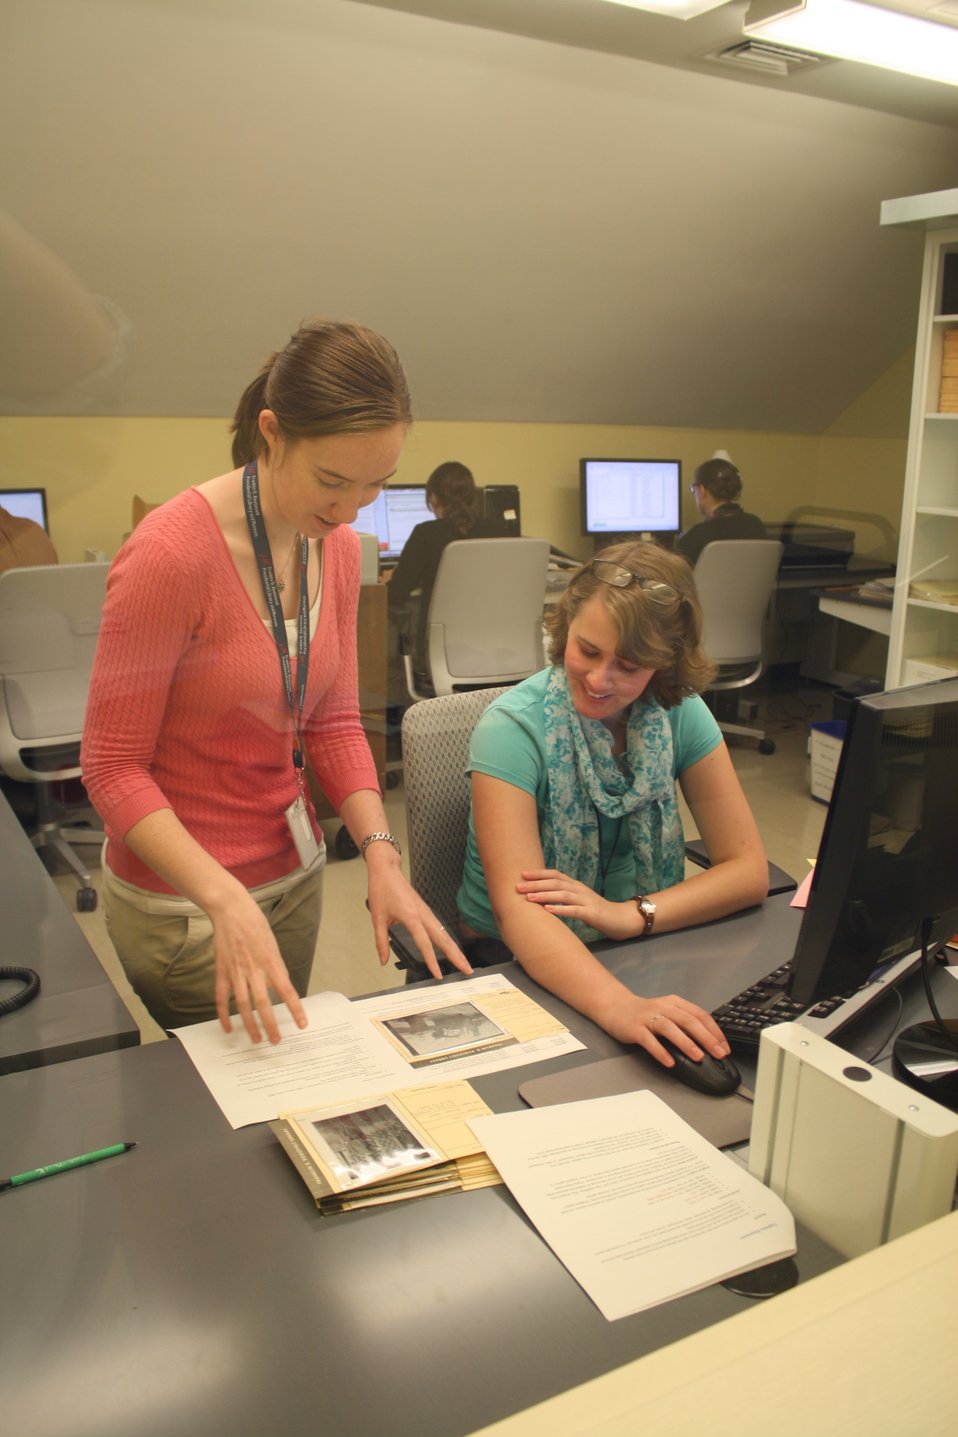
Archivist Sarah Malcolm explains a project to Anne Fildes, one of the FDR Library's summer interns.; Location: Franklin D. Roosevelt Presidential Library, Hyde Park, New York